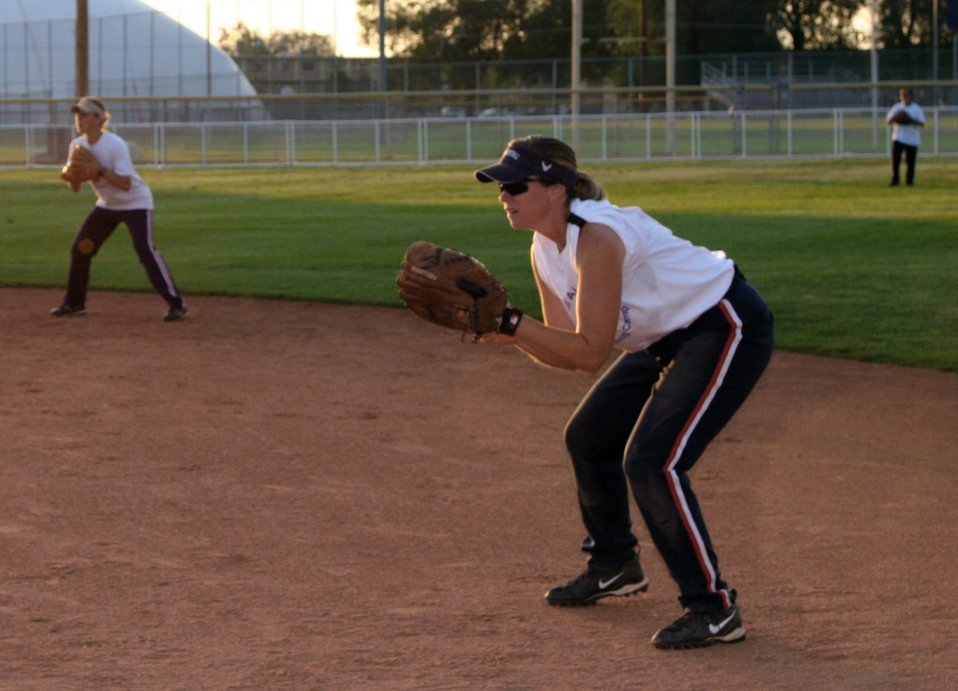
Softball: Airmen to represent Air Force in tournament

Master Sgt. Laurie Doughty prepares for the ball during softball practice Sept. 11 at Hill Air Force Base, Utah. Selections were made during the week-long camp to represent the Air Force in the 2007 All-Armed Forces Women's Softball Championship to be held Sept. 18 to 20 here. Sergeant Hill is stationed at Eglin Air Force Base, Fla.